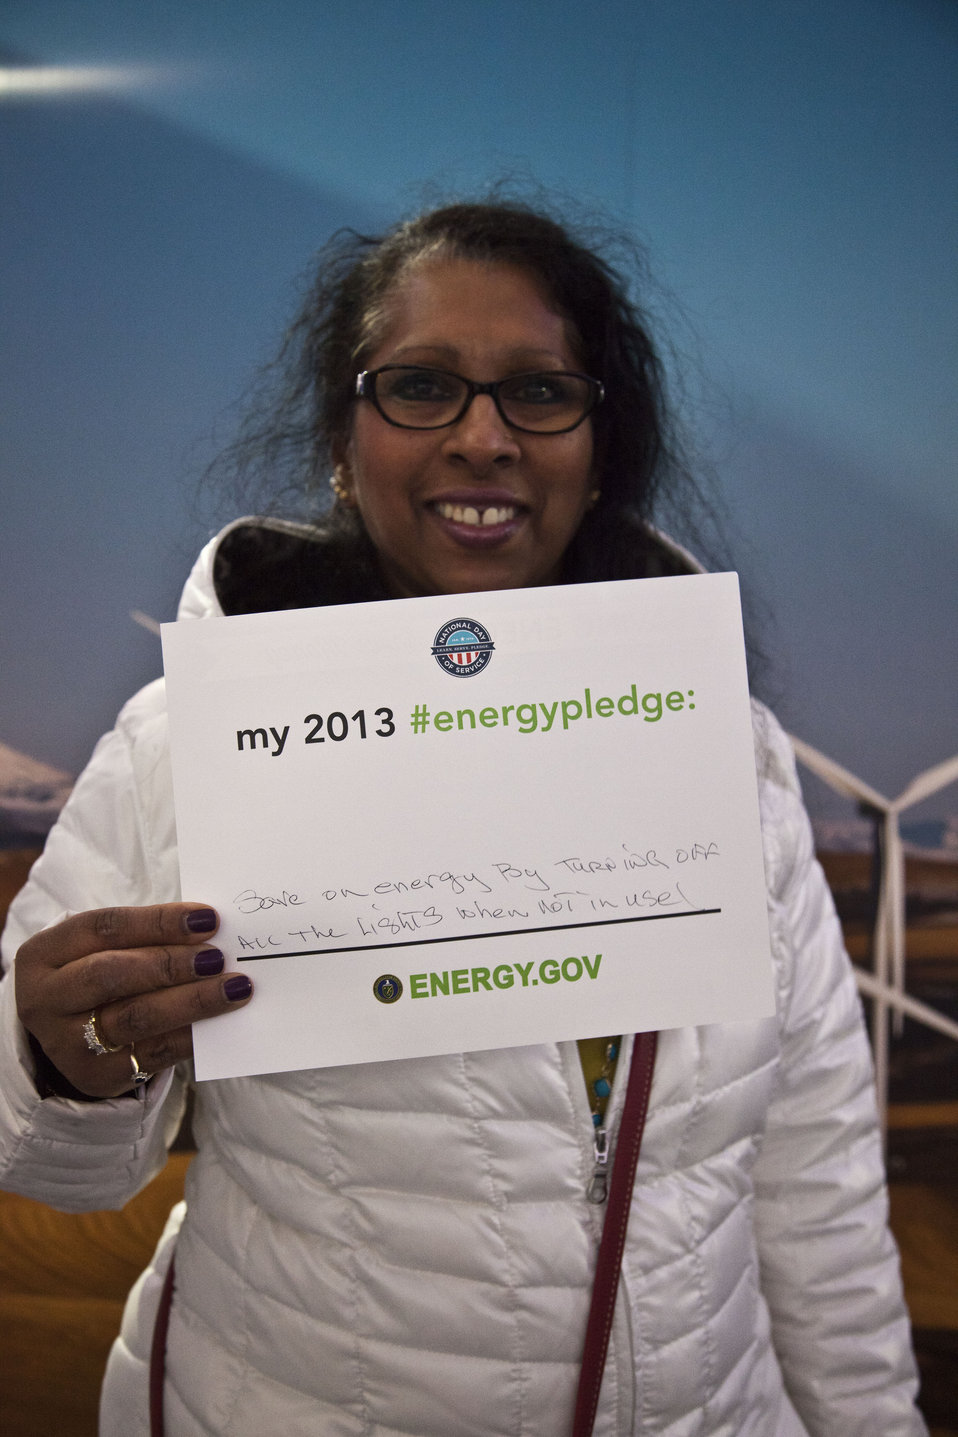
What's your #energypledge?